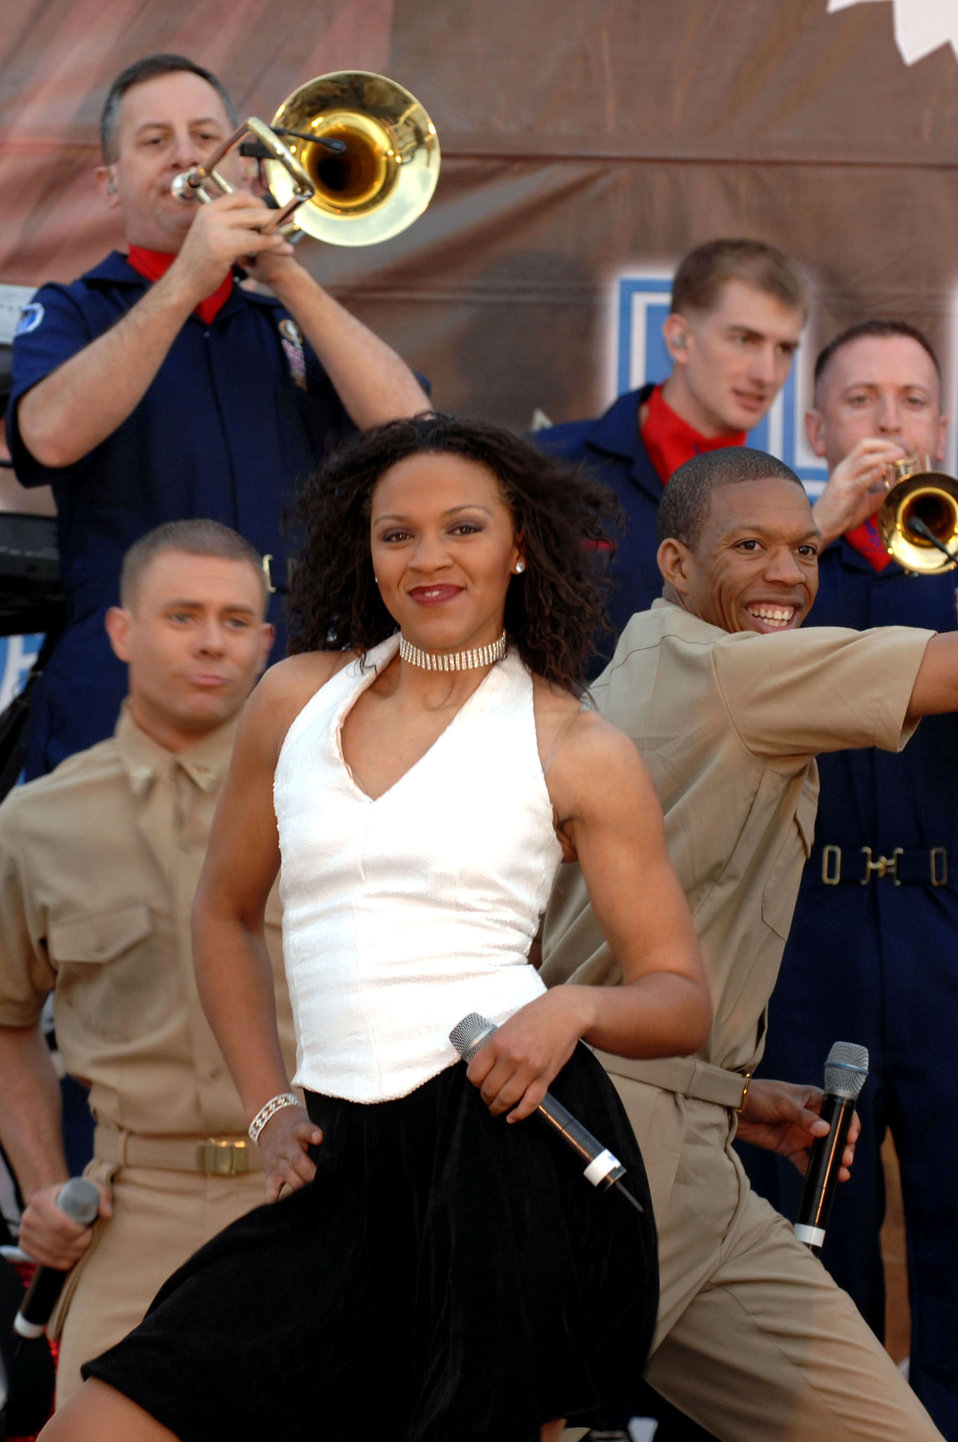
Tops in Blue perform for Airmen in Iraq

Tops in Blue members perform for Airmen and Soldiers April 26 at Kirkuk Air Base, Iraq. Tops in Blue's goal is to enhance mission productivity for Air Force members around the world. Tops In Blue Airmen perform an average of 120 performances at 100 locations worldwide each year.